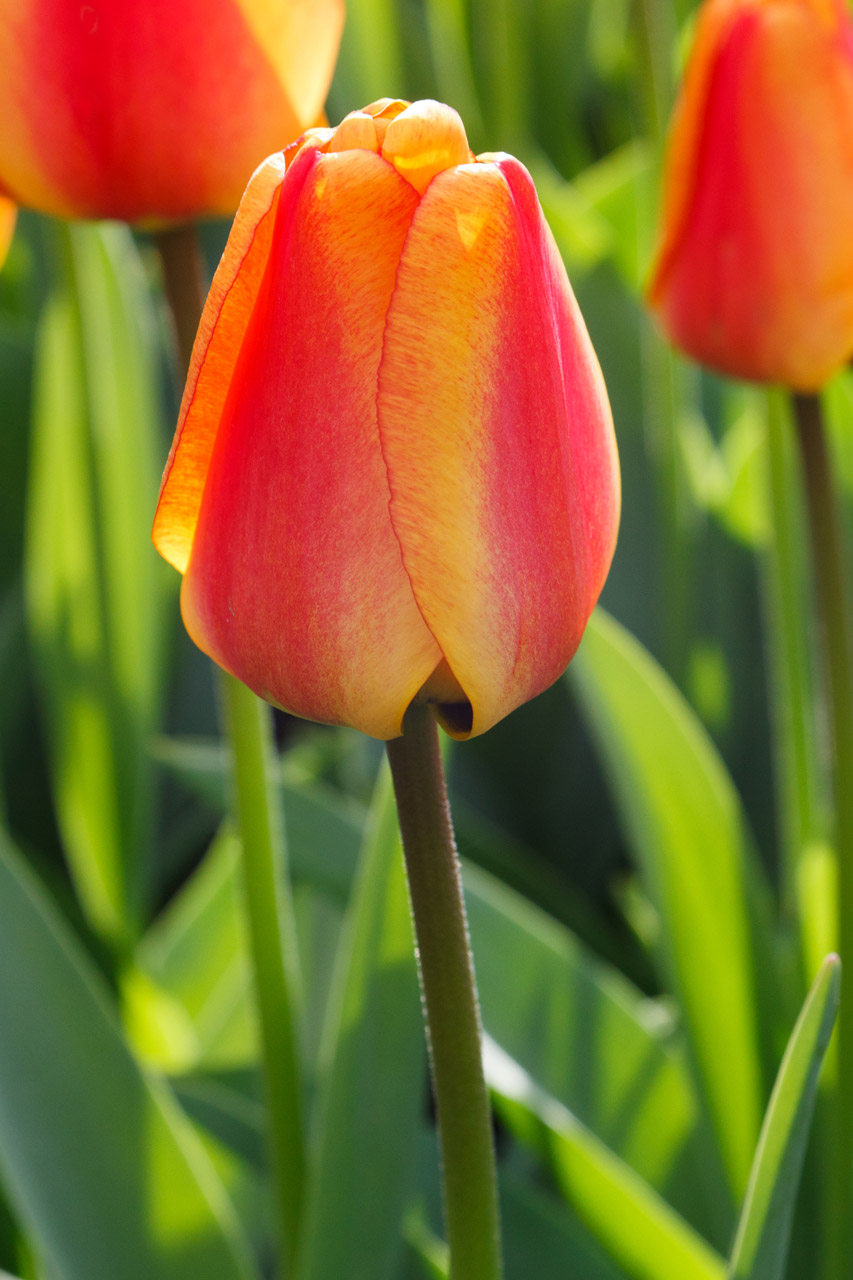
Beautiful tulip

Beautiful red/yellow tulip flower.